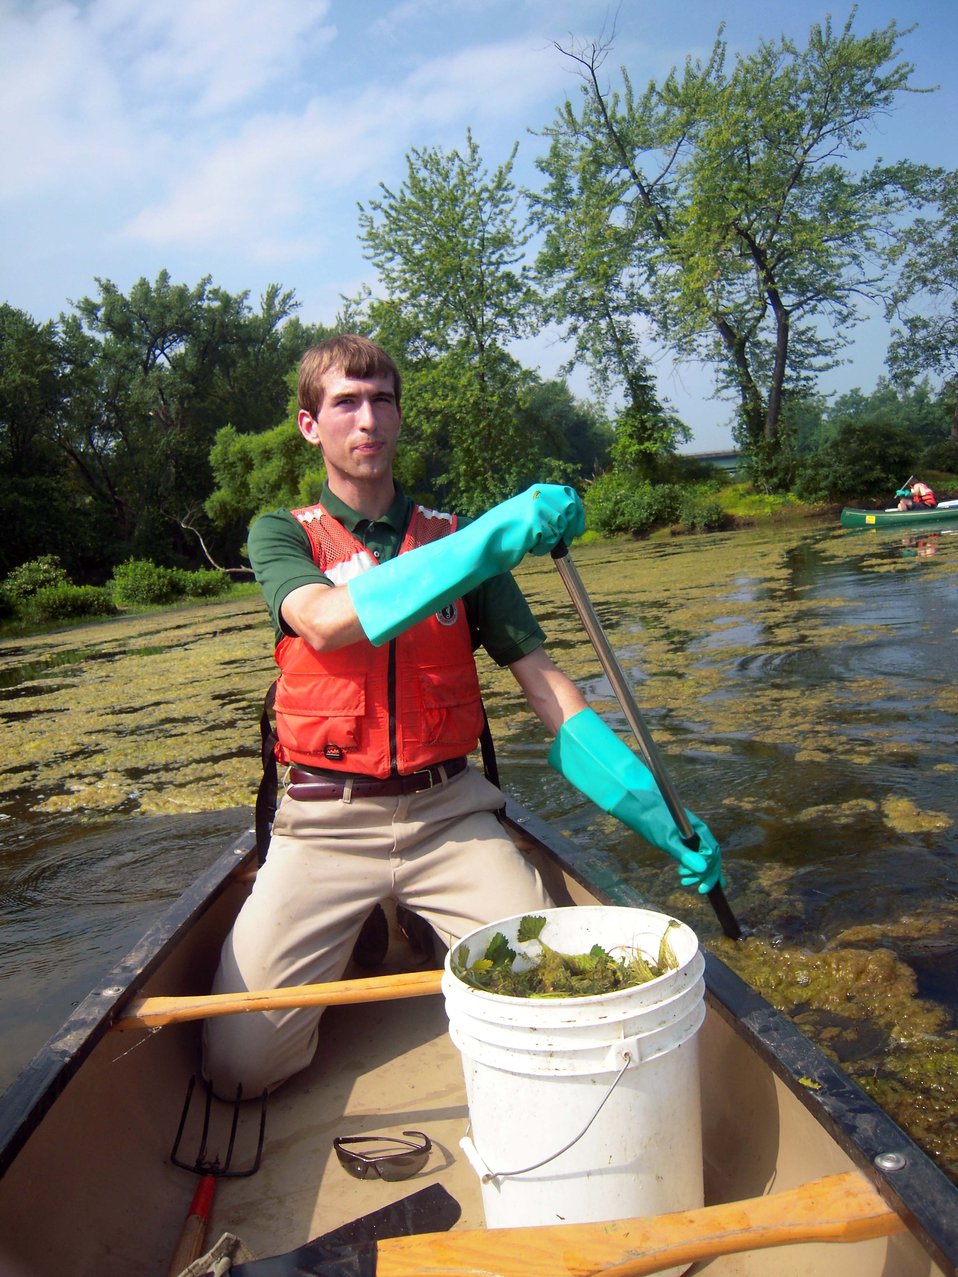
USFWS intern Christopher Poulin

Christopher Poulin paddling the canoe through water chestnut infested water.